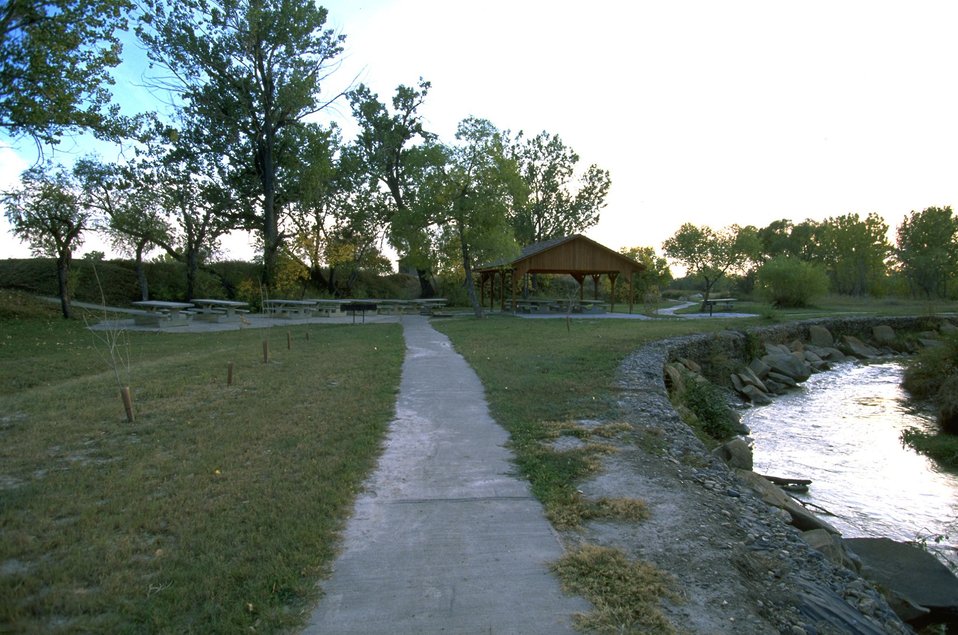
Group shelter and picnic area at Matthews Recreation Site